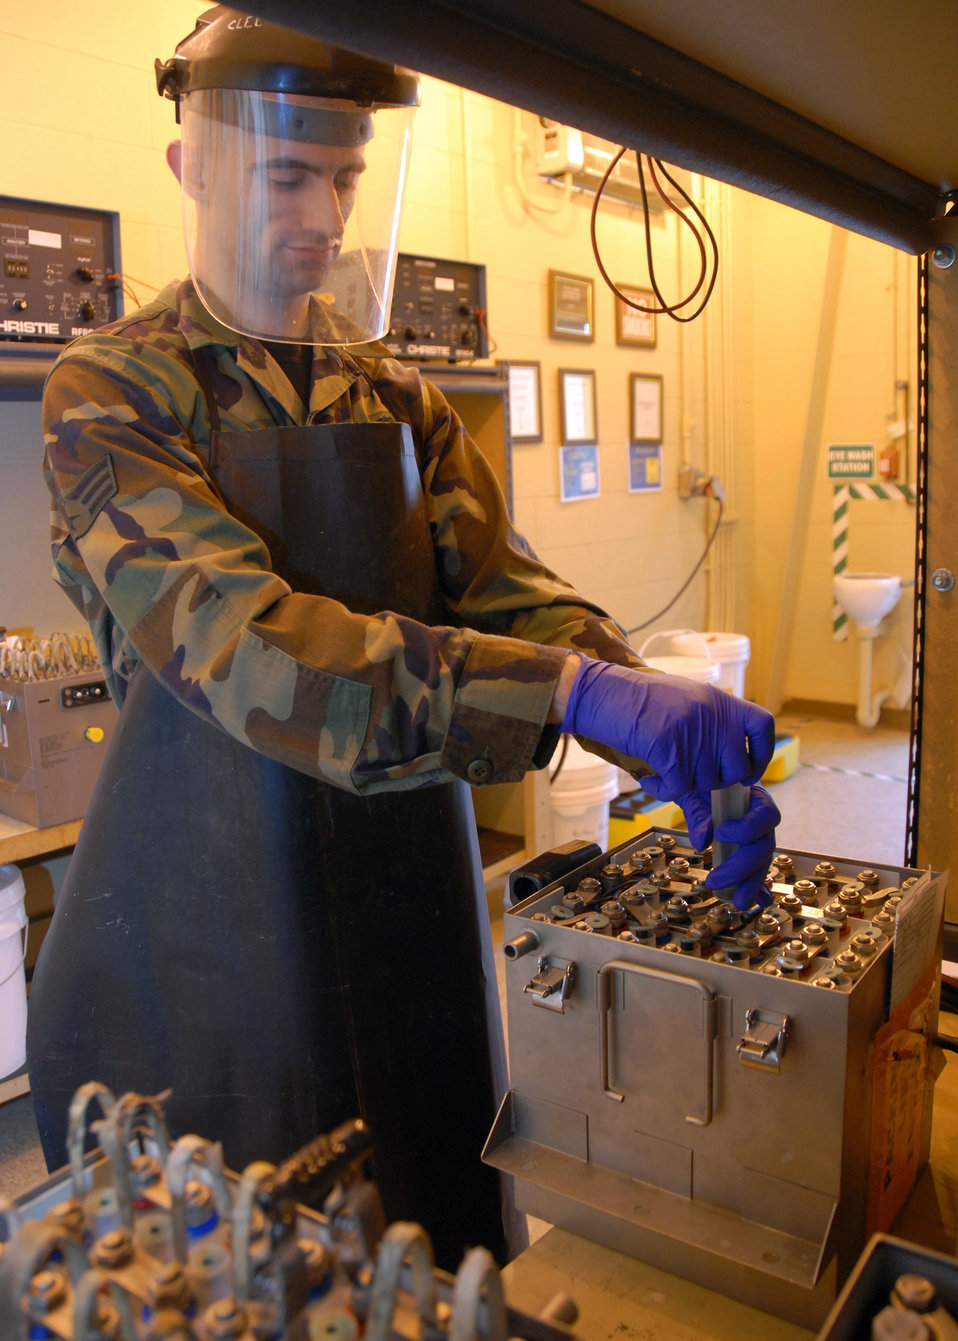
Life-risking Airmen save mission, assets

Senior Airman David Stricker performs an electrolyte test on an aircraft battery in the 437th Maintenance Squadron electrical and environmental battery shop Feb. 11. The shop is responsible for maintaining all the C-17 Globemaster III batteries at Charleston Air Force Base, S.C. Airman Stricker is an electrical and environmental systems journeyman with the 437th MXS.